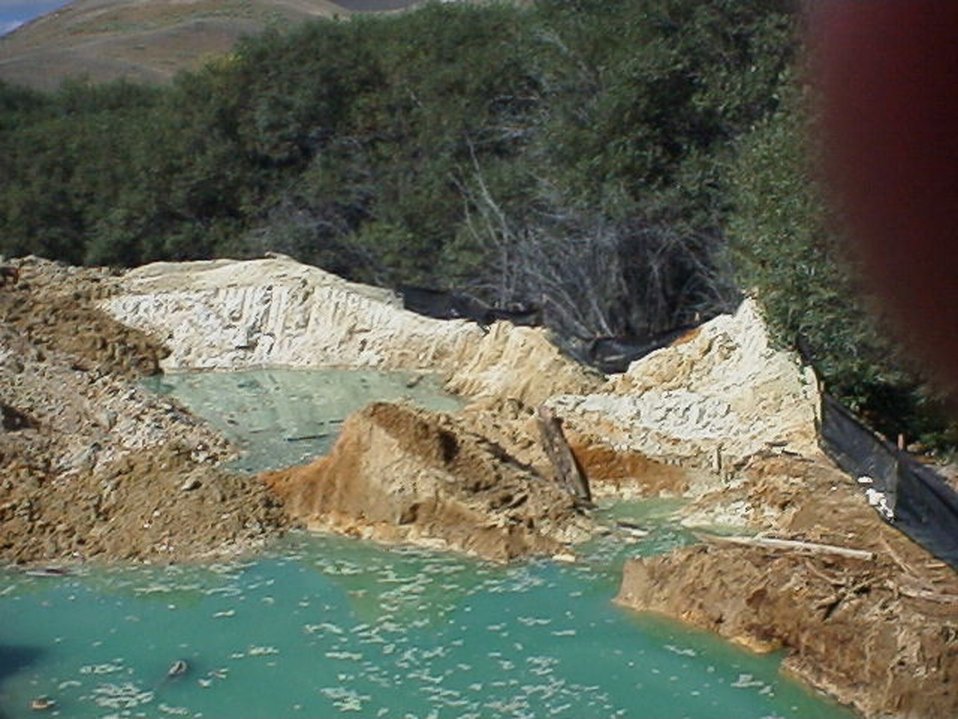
Moran Tunnel Mine adit empties into Champagne Creek pH of water is 2.5 to 3.5 Water is blue-green from copper sulfate Idaho Falls Field Office USRD Upper Snake River District